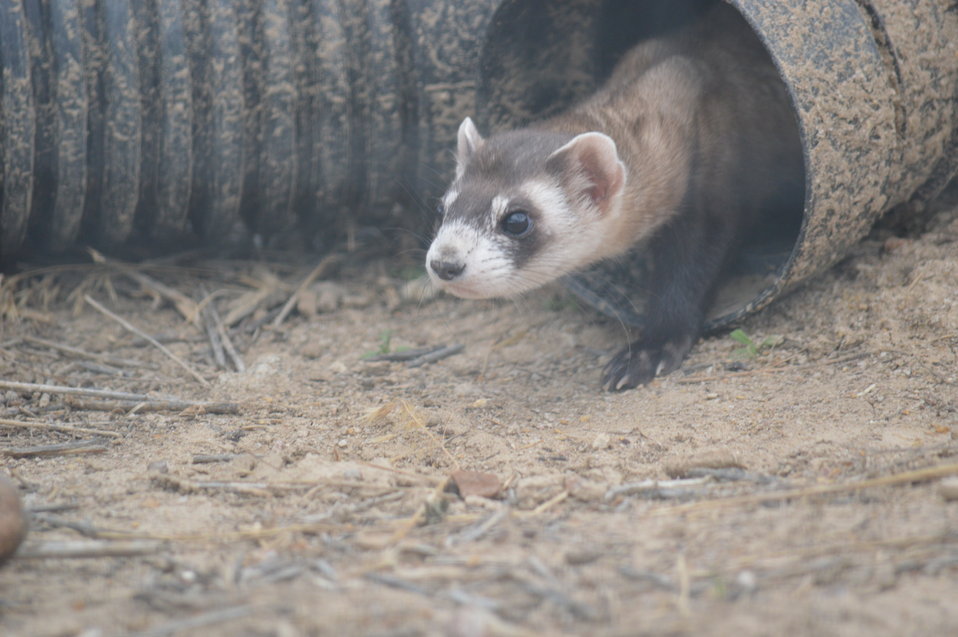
Interns visit the NBFFCC

In the summer of 2012, USFWS Region 6 interns visited the National Black-footed Ferret Conservation Center (NBFFCC) in Colorado to learn how the program reintroduces the endangered Black-footed ferret back into its native habitat.